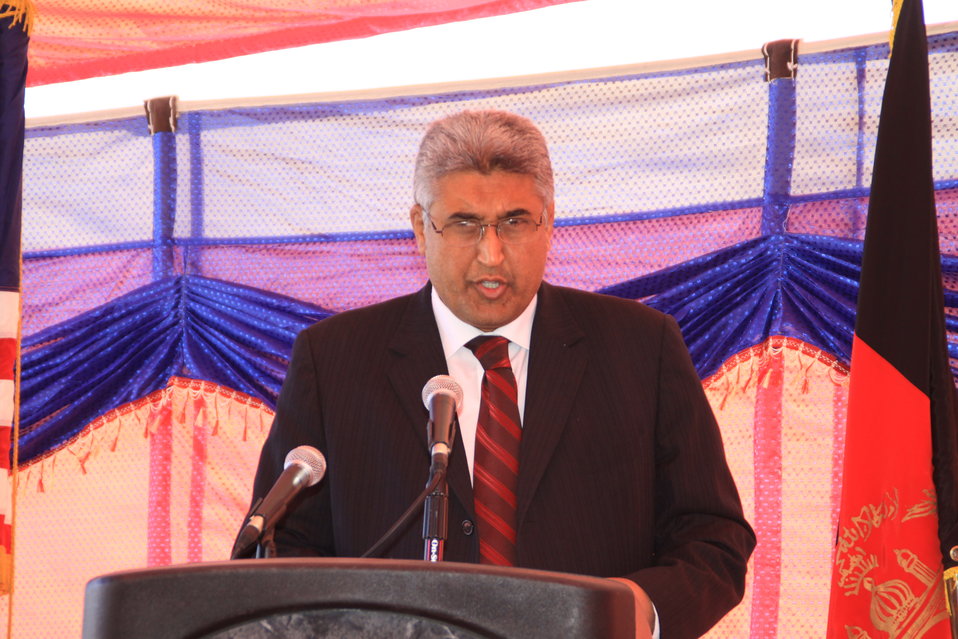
AVIPA Plus Wheat Seed Distribution 101005

US Ambassador Karl Eikenberry and USAID Acting Mission Director Kevin Brownawell joined the Minister of Agriculture, Irrigation and Livestock, H.E. Minister Mohammed Rahimi in signing a Memorandum of Understanding and distributing vouchers to area farmers for wheat and fertilizer.

US Ambassador Karl Eikenberry and USAID Acting Mission Director Kevin Brownawell joined the Minister of Agriculture, Irrigation and Livestock, H.E. Minister Mohammed Rahimi in signing a Memorandum of Understanding and distributing vouchers to area farmers for wheat and fertilizer.